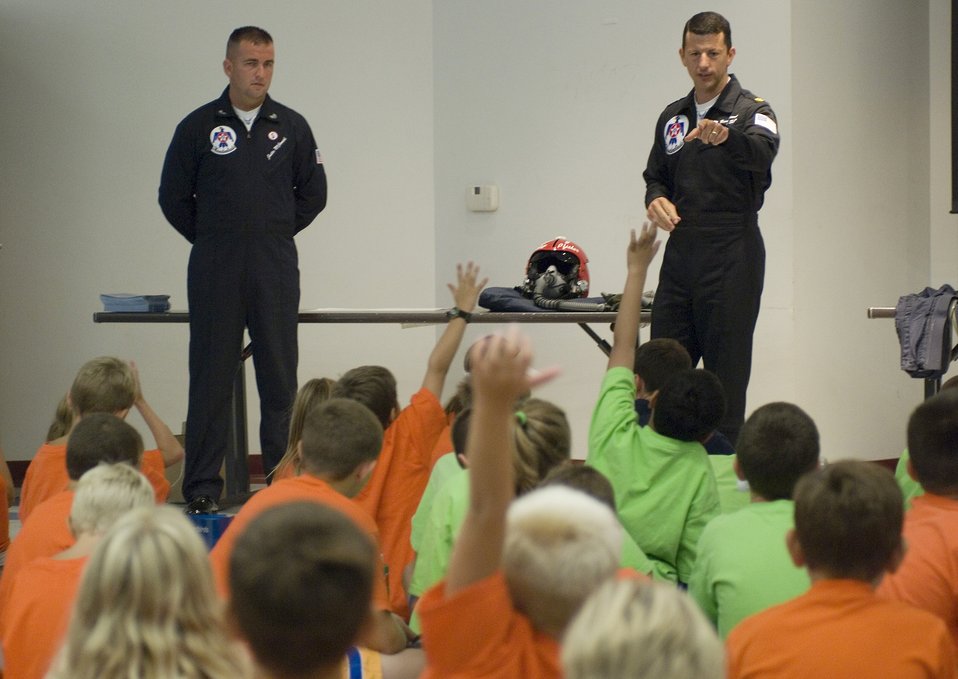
Thunderbirds visit youth camp

Maj. Brian Farrar and Staff Sgt. Justin McCormick of the Thunderbirds, the U.S. Air Force Air Demonstration Squadron, answer questions about what it is like to be in the Air Force and be a Thunderbird. Major Farrar is Thunderbird No. 5 and lead solo. Sergeant McCormick is crew chief on the No. 5 aircraft. The camp visit was part of Air Force Week community activities in the St. Louis area.